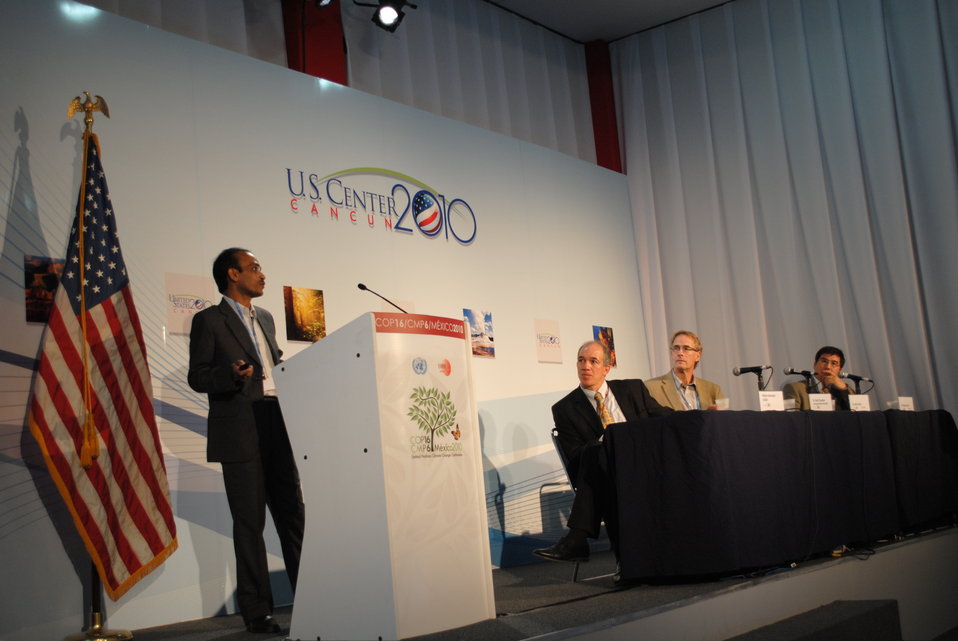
Dr. Islam Addresses the U.S. Center

Dr. Islam, a Borlaug Fellow, addresses the U.S. Center at COP-16 in Cancun, Mexico, on December 8, 2010.